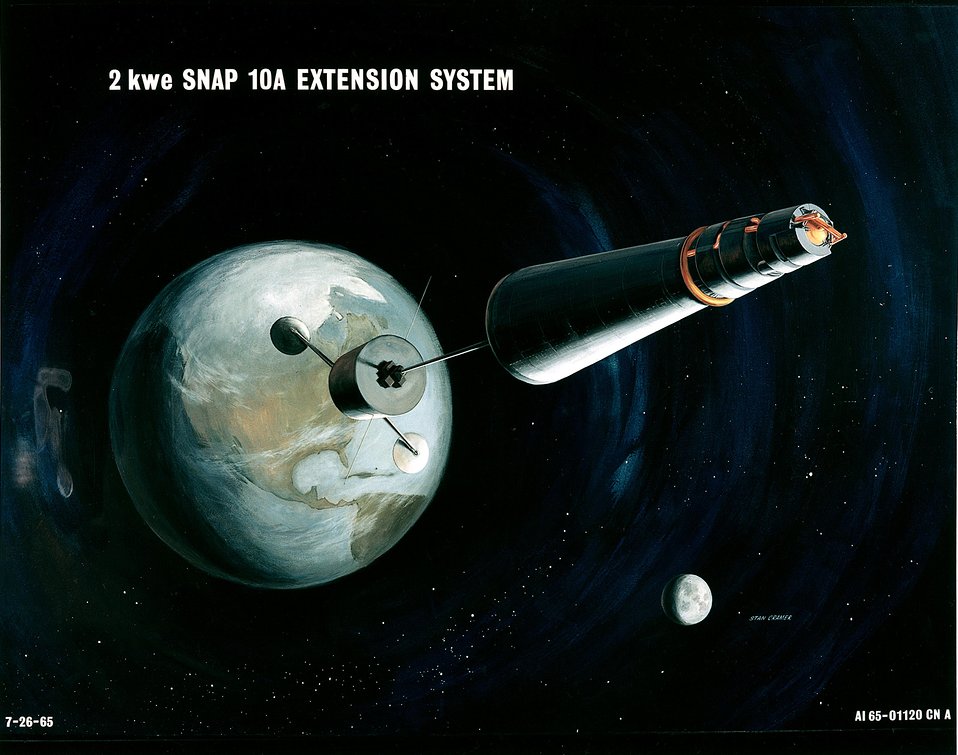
Communications reactor (callout should go)